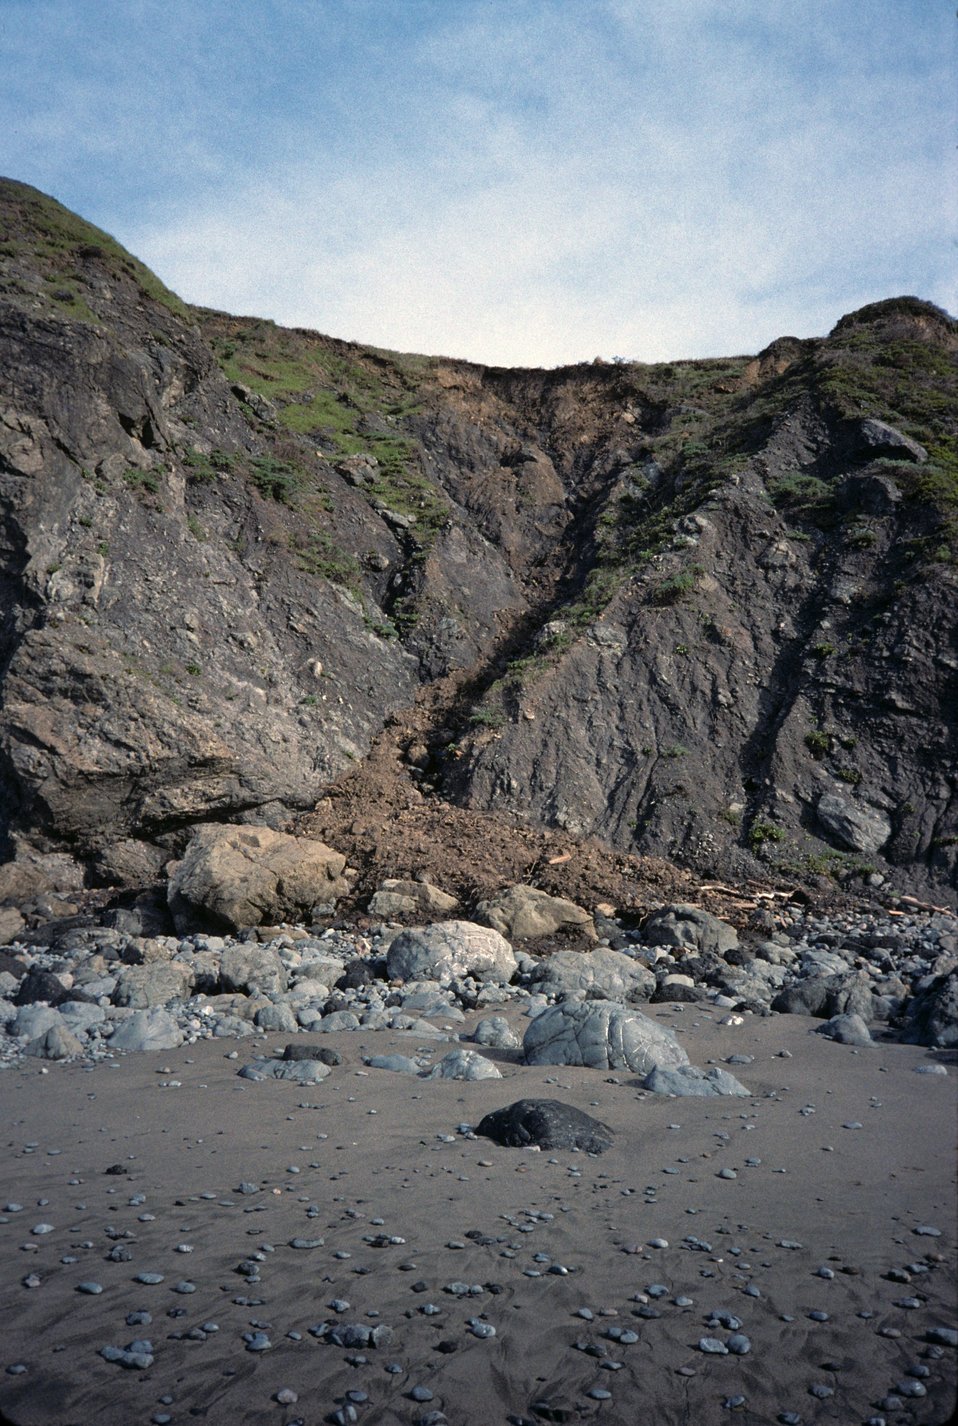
Pinnacle Gulch Beach